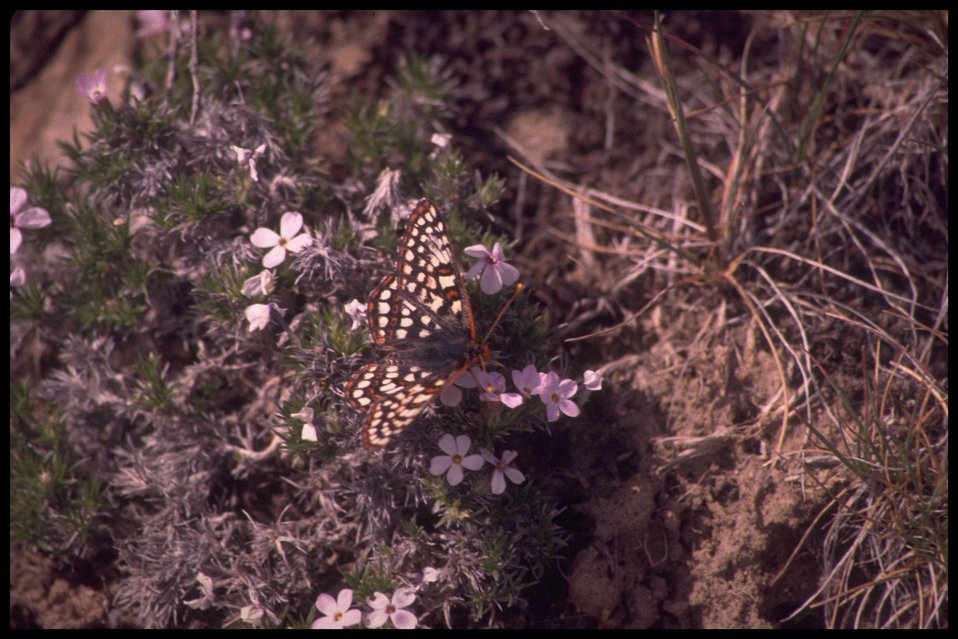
Medium shot of butterfly, Lakeview District.